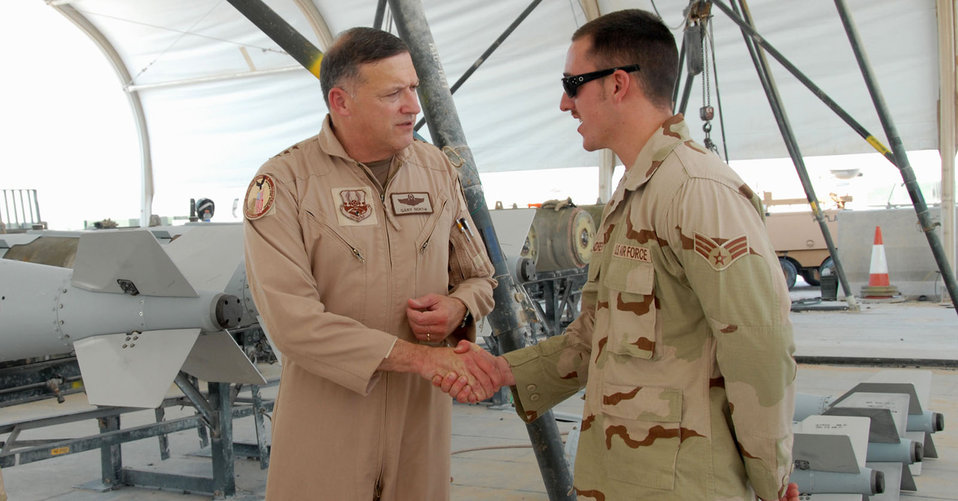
CENTAF commander visits 379th Air Expeditionary Wing

Lt. Gen. Gary North recognizes Senior Airman Michael McAndrew with a coin for his superior work ethic since his unit arrived in Southwest Asia less then a month ago. The general is the commander of U.S. Central Command Air Forces and 9th Air Force. Airman McAndrew is assigned to the 379th Expeditionary Maintenance Squadron munitions flight.